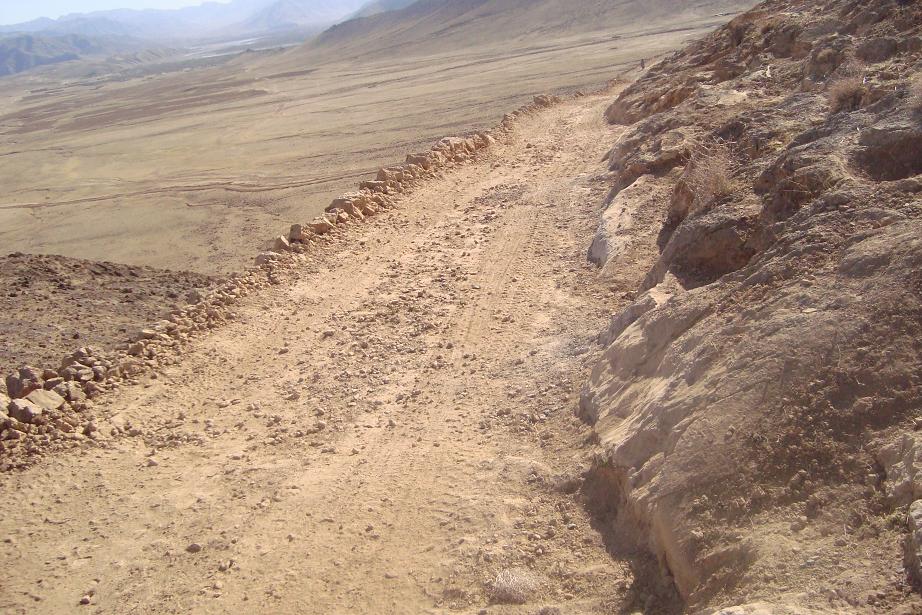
top section improved